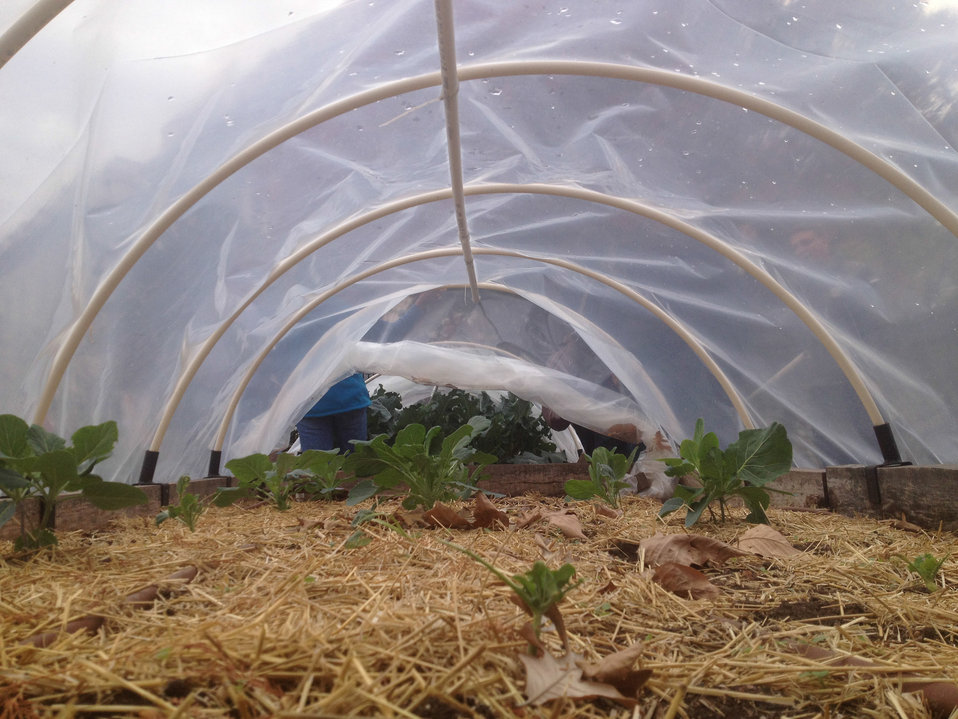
A hoop house made of plastic tube and sheeting covers a raised bed garden, equipped with micro irrigation tubing, straw mulch and seedlings growing at the People's Garden at the USDA Whitten Building east parking lot in Washington, DC, on Friday, November 22, 2013.